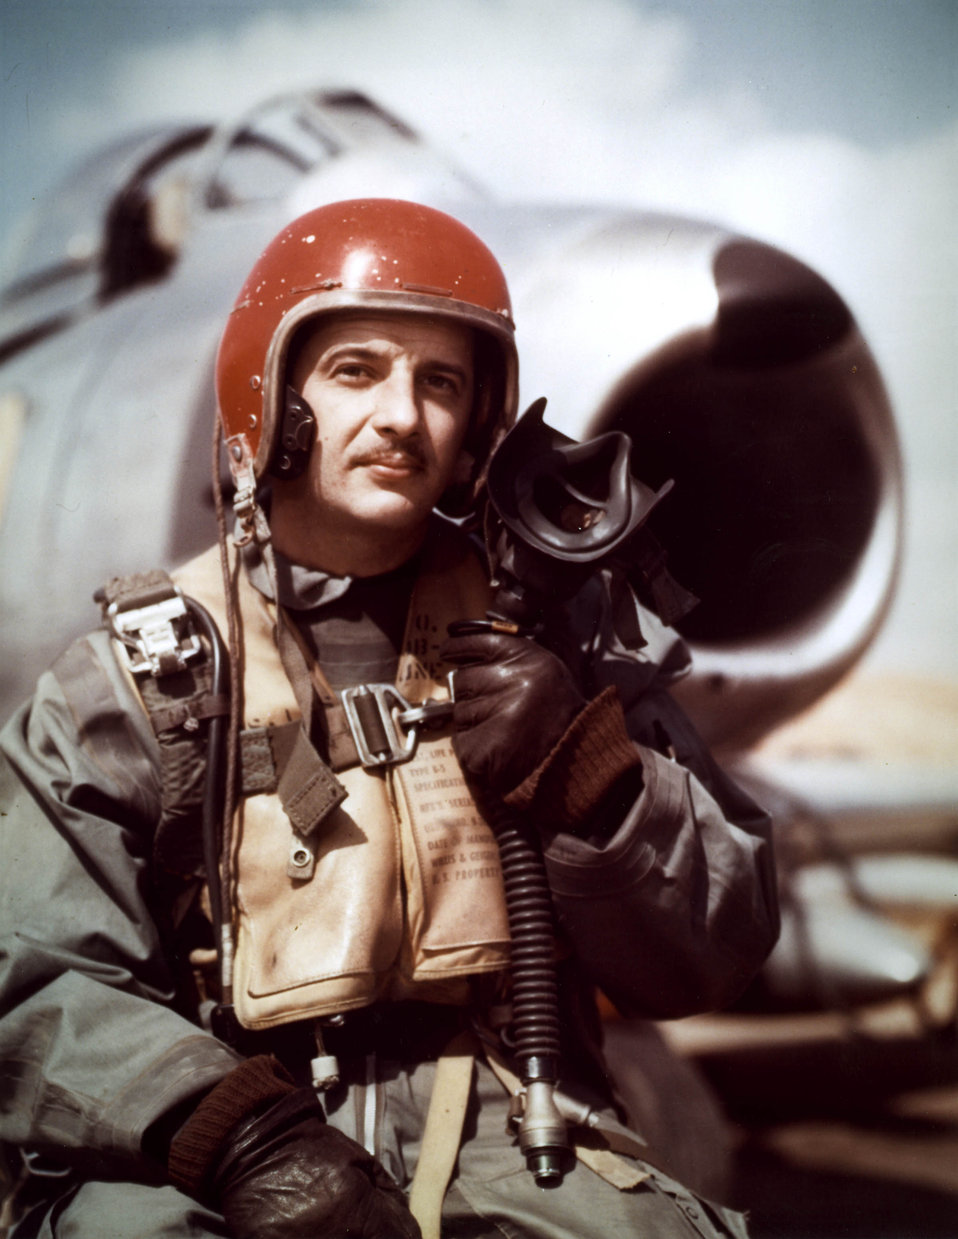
Manuel J. Fernandez

1950's -- Capt. Manuel J. Fernandez Jr. of the 34th Fighter Intercepter Wing, became the 26th jet ace of the Korean War Feb. 18, 1953.